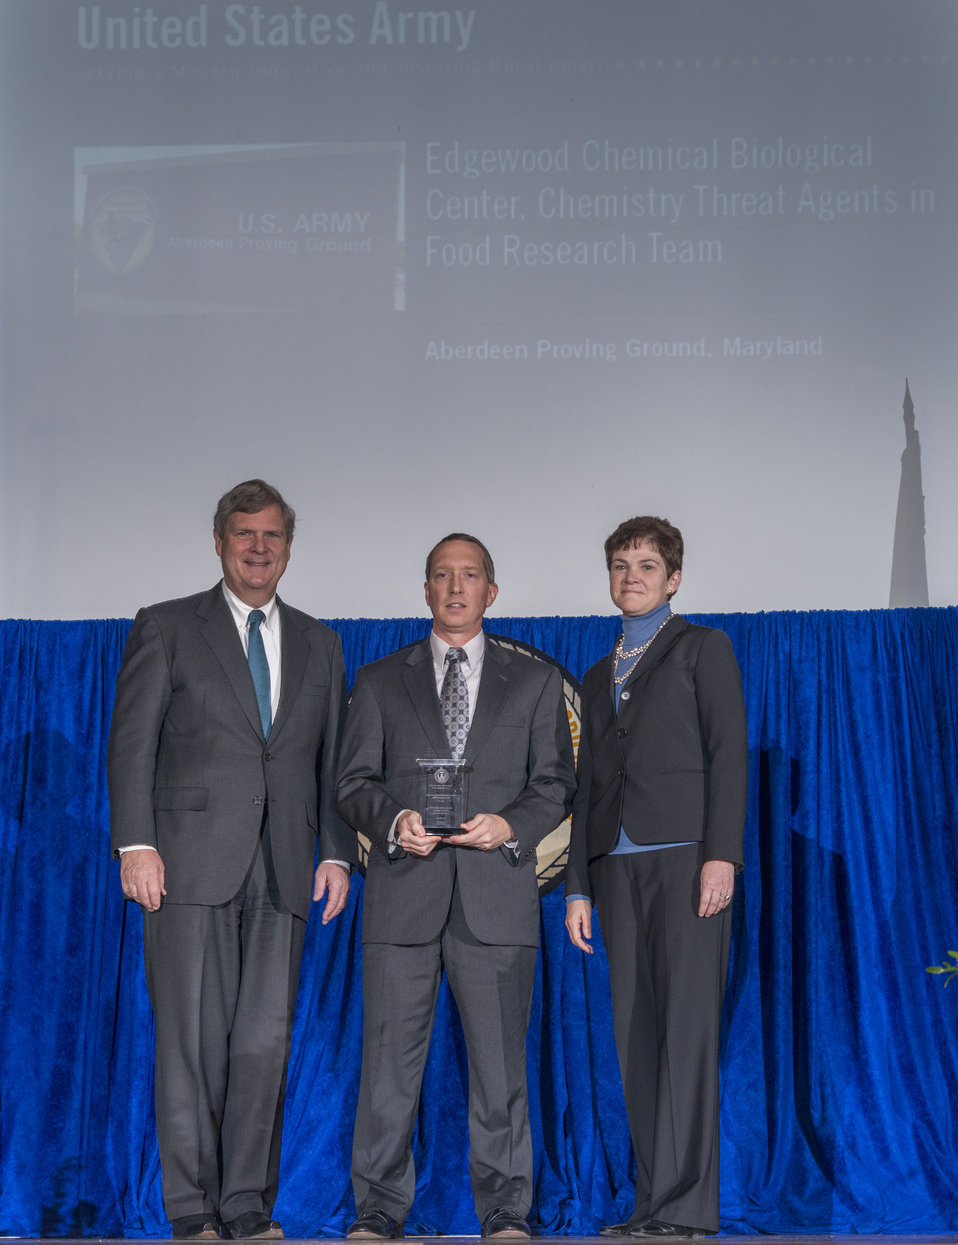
Agriculture Secretary Tom Vilsack and Agriculture Deputy Secretary Krysta Harden present the Secretary’s Honor Award to Edgewood Chemical Biological Center, Agent Chemistry Team U.S. Army, at Aberdeen Proving Ground, in Maryland Group leader Frederic Berg for partnering with the U.S. Department of Agriculture (USDA) to conduct critical chemical threat agent research to ensure that the Nation’s food supply is safe and reliable at the 2013 Secretary's Honor Awards in the Jefferson Auditorium at USDA in Washington, D.C. on Wednesday, Dec. 11, 2013.